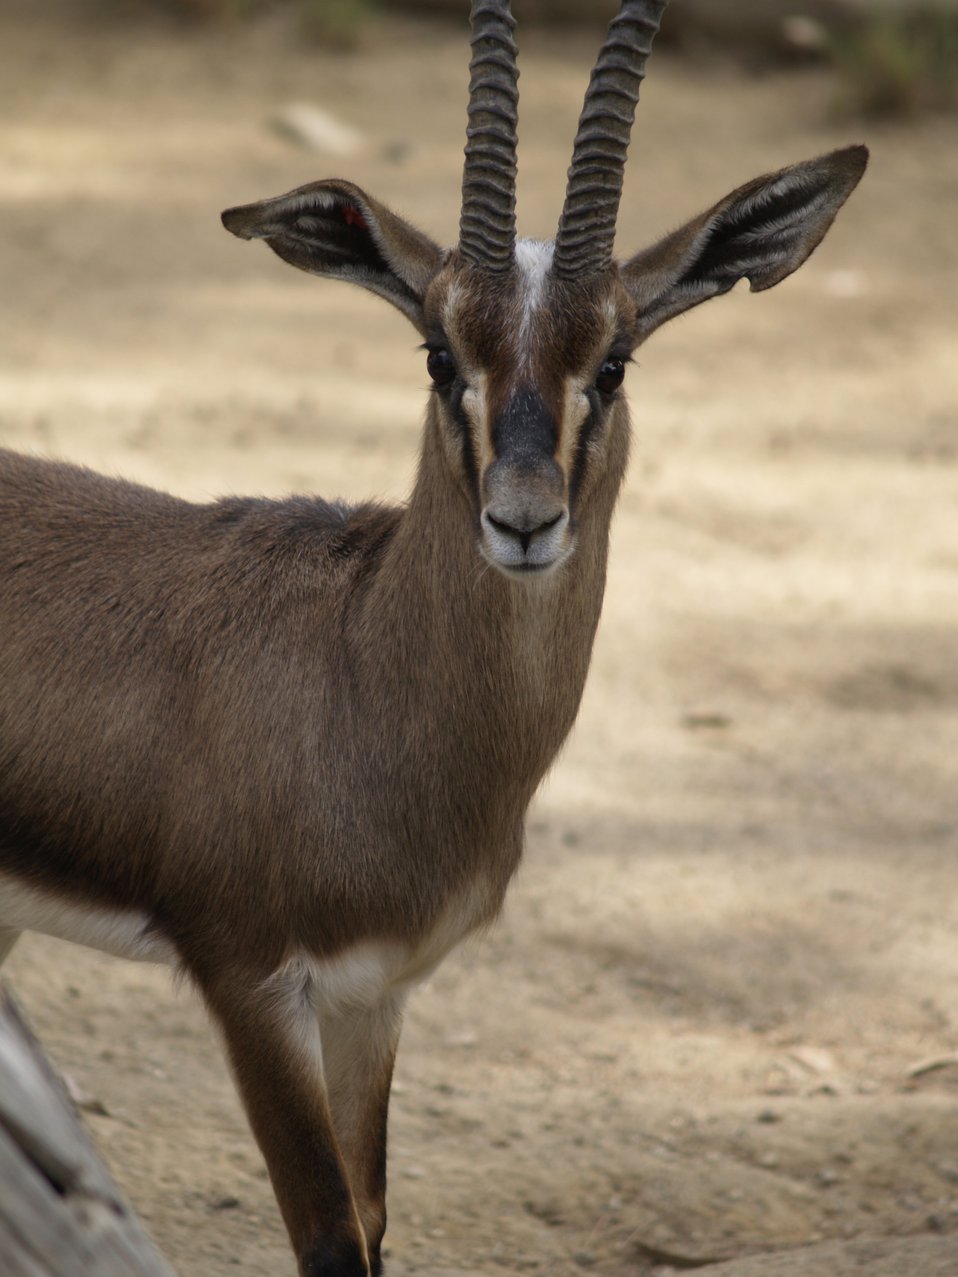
Cuvier's Gazelle, an endangered species of gazelle in Tunisia. The cuvier gazelle weighs up to 35 kilos and is 70 cm tall.